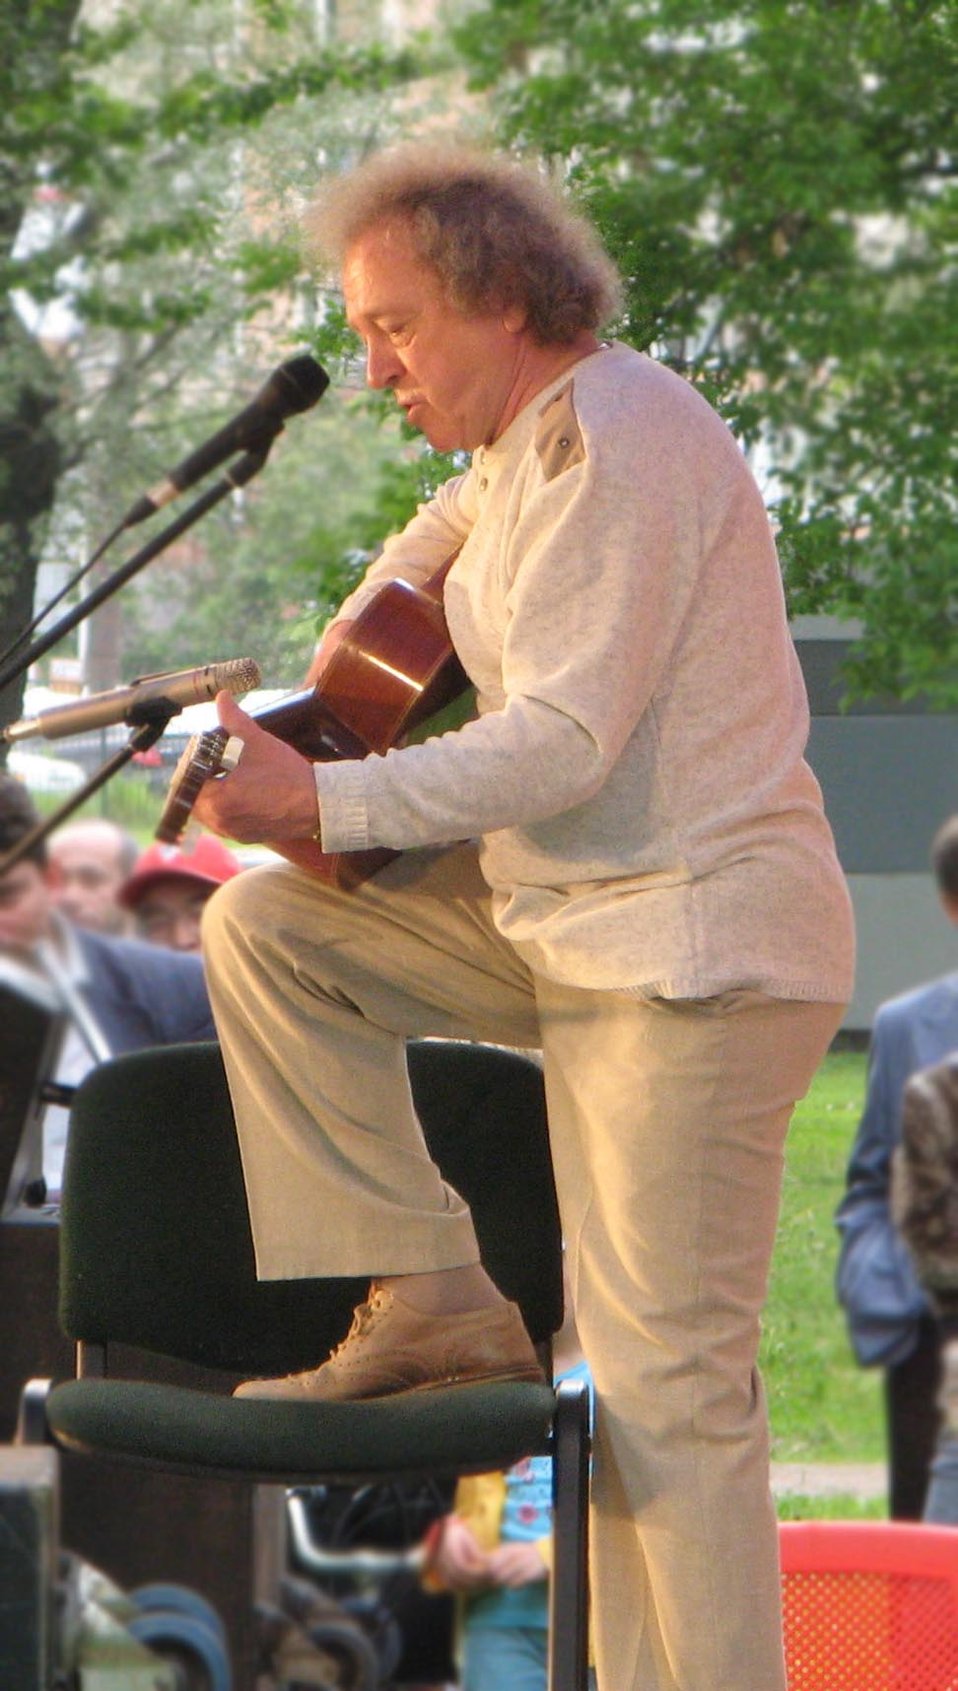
Русский: Кукин, Юрий Алексеевич